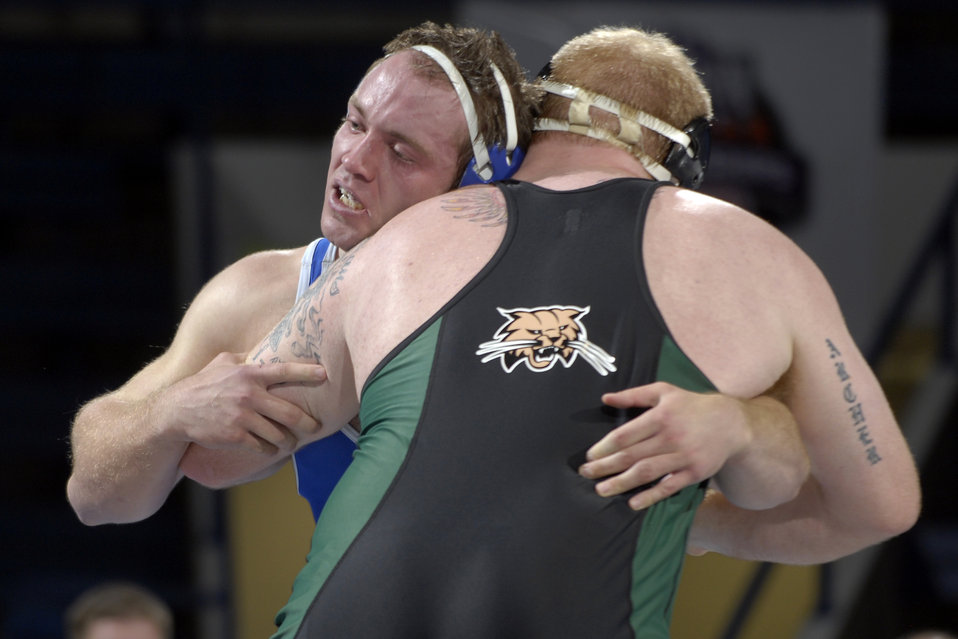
Falcons lose in first home contest

In the heavyweight class Falcon senior Stephen Larson wrestles Ohio University's Andy Hartshorn during the U.S. Air Force Academy's first home contest of the season at Clune Arena Dec. 11, 2009. Hartshorn won the match 7-4.